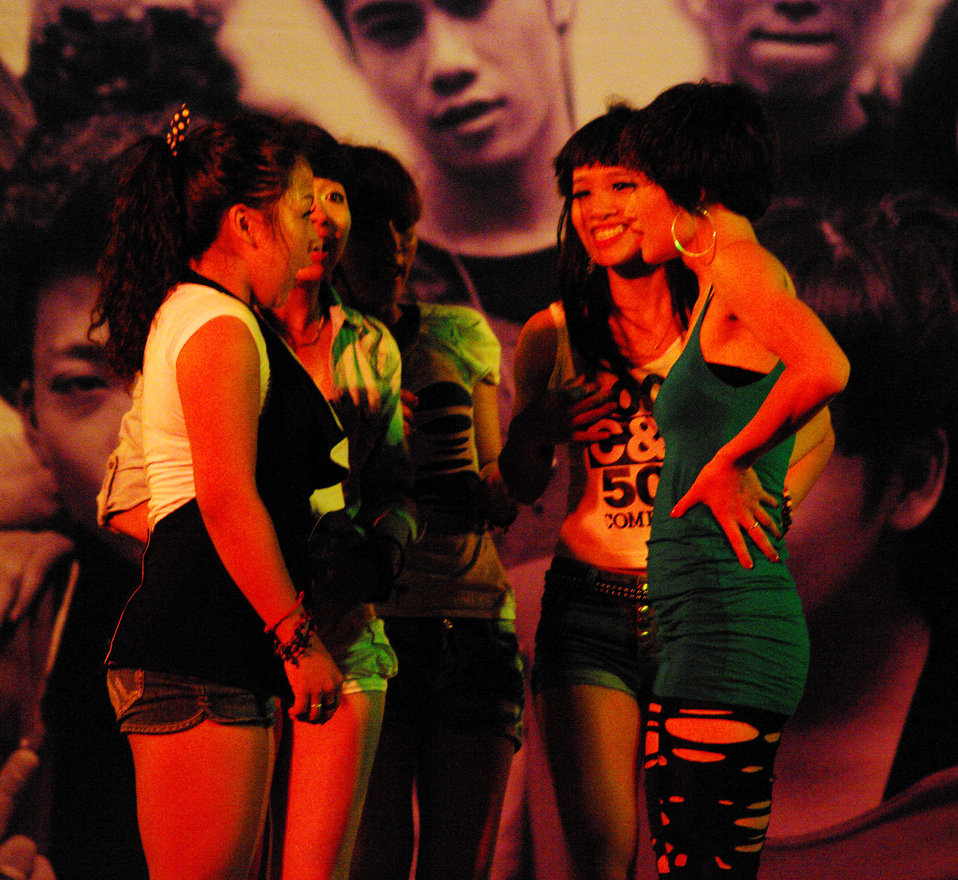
PEPFAR Sponsors Hip Hop to Stop the Spread of HIV